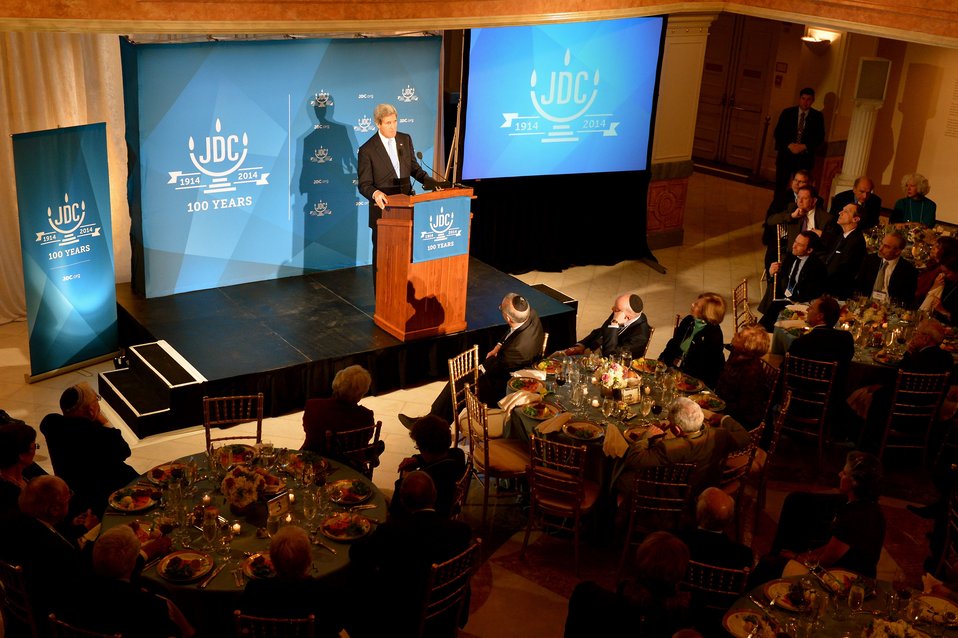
Secretary Kerry Delivers Remarks at the American Jewish Joint Distribution Committee’s 100th Anniversary Celebration

U.S. Secretary of State John Kerry delivers remarks at the American Jewish Joint Distribution Committee’s 100th Anniversary Celebration at the National Women in the Arts Museum in Washington, D.C., on December 9, 2013.